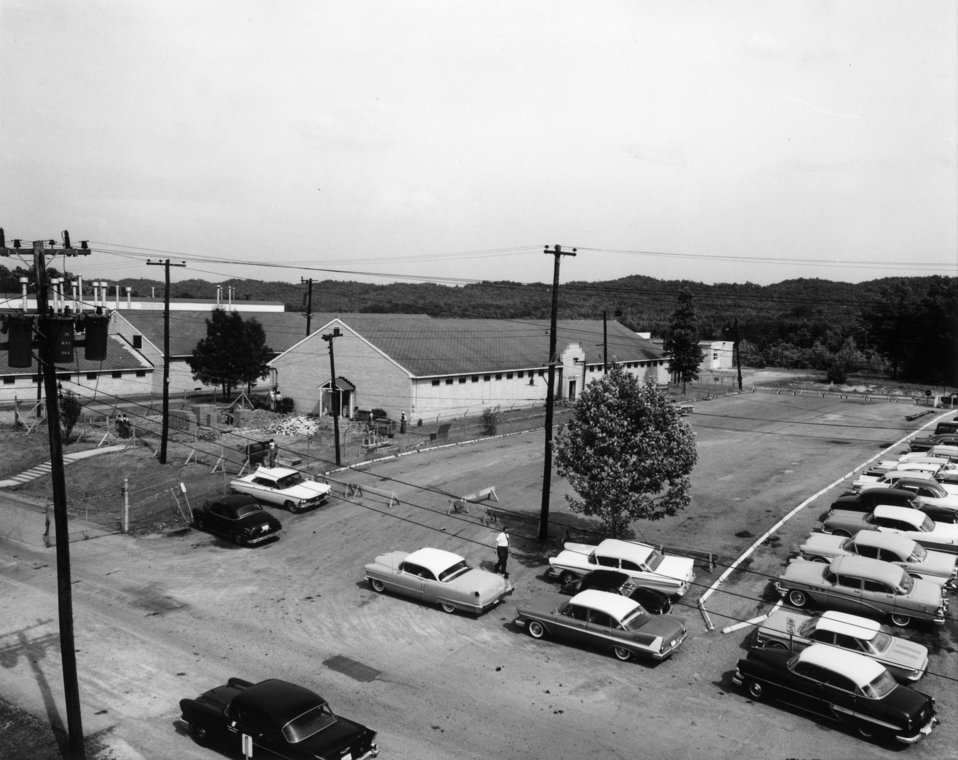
AEC Adm. Bldg. Oak Ridge

60-0438 DOE photo T.R. Cook 5-26-1960 Oak Ridge Tennessee